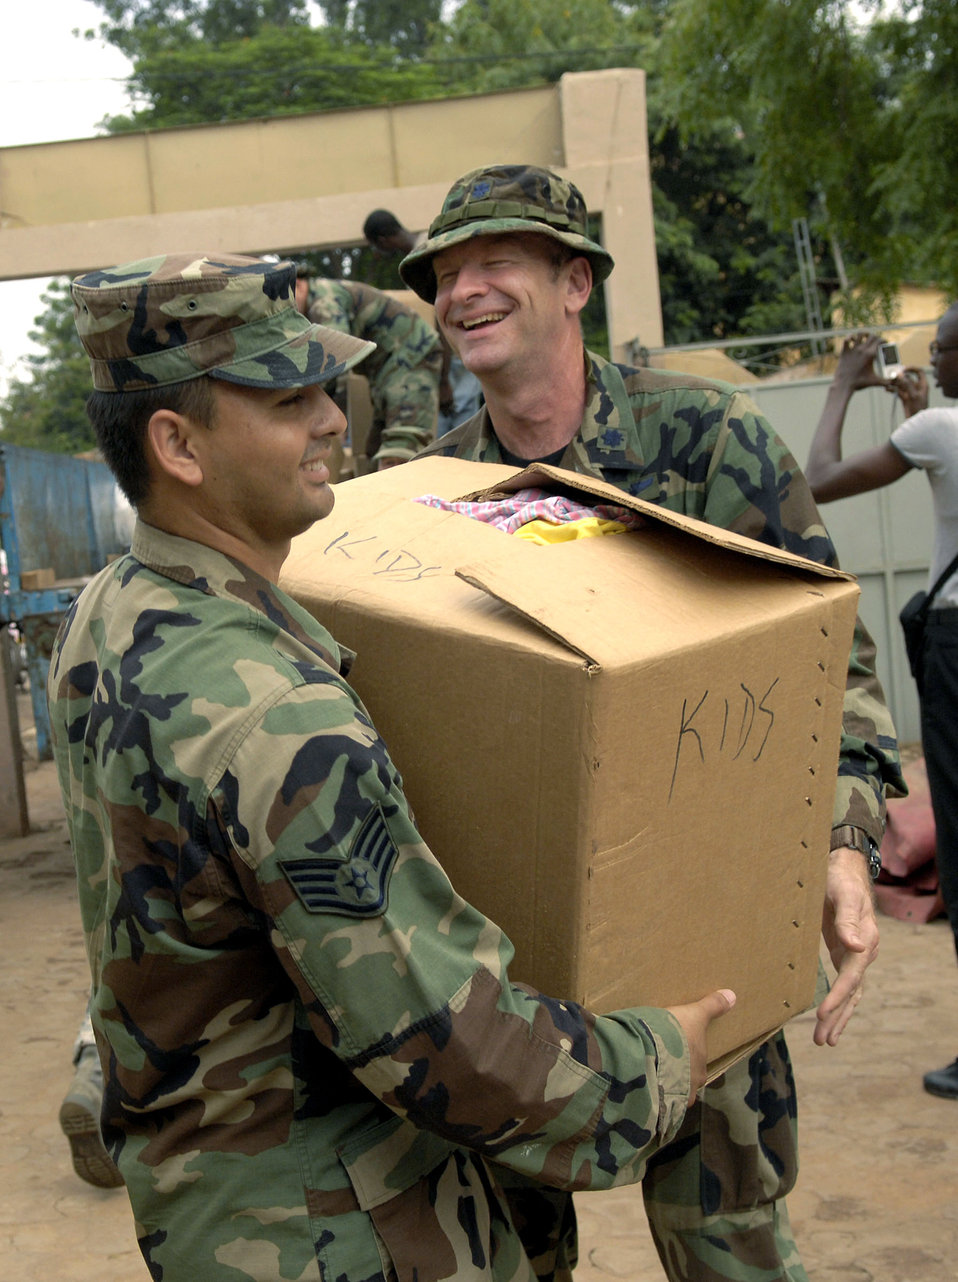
Airmen Donate Clothes to Malian Orphanages

Lt. Col. Joseph Connolly hands Staff Sgt. Carlos Lomeli a box of children's clothing to be donated to the Bamako National Orphanage July 16. Airmen from the 31st Medical Group at Aviano Air Base, Italy, collected more than 2,500 pounds of clothing, toys and shoes to distribute at Bamako orphanages. Colonel Connolly is deployed from the 31st Medical Group at Aviano AB. Sergeant Lomeli is deployed from the 48th Medical Group at Royal Air Force, Lakenheath, England.